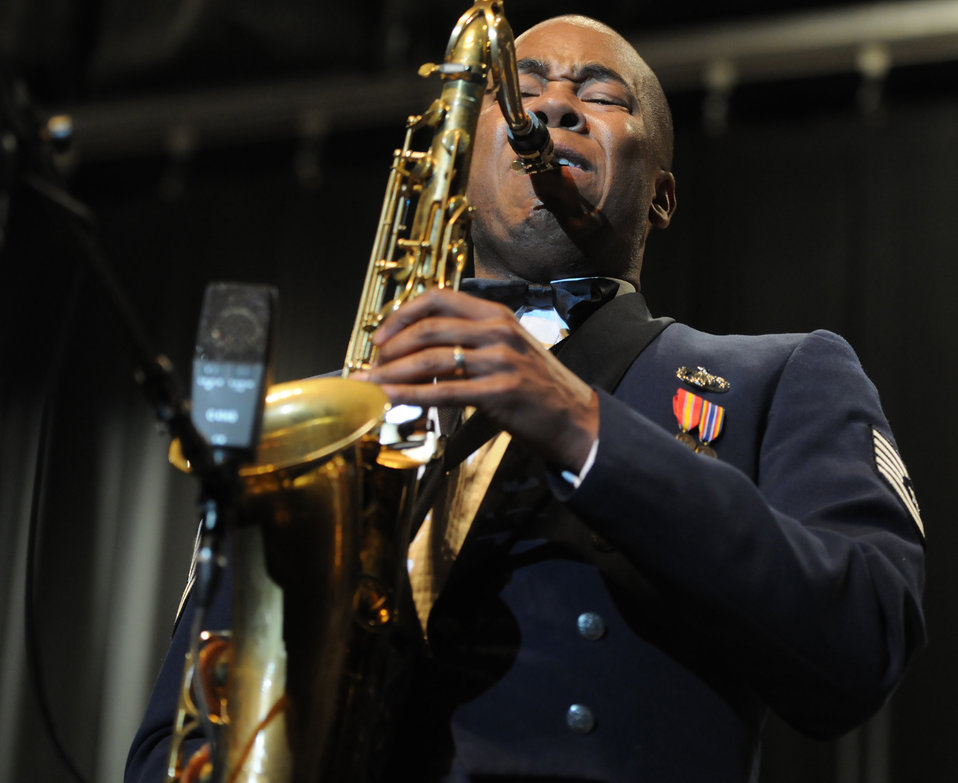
Airmen of Note wrap up

Tech. Sgt. Grant M. Langford performs a solo March 15, 2011, at Robert E. Lee High School in Staunton, Va. This performance was the first on the Air Force Band Airmen of Note's 2011 spring tour. Sergeant Langford is a tenor saxophonist with the Airmen of Note.